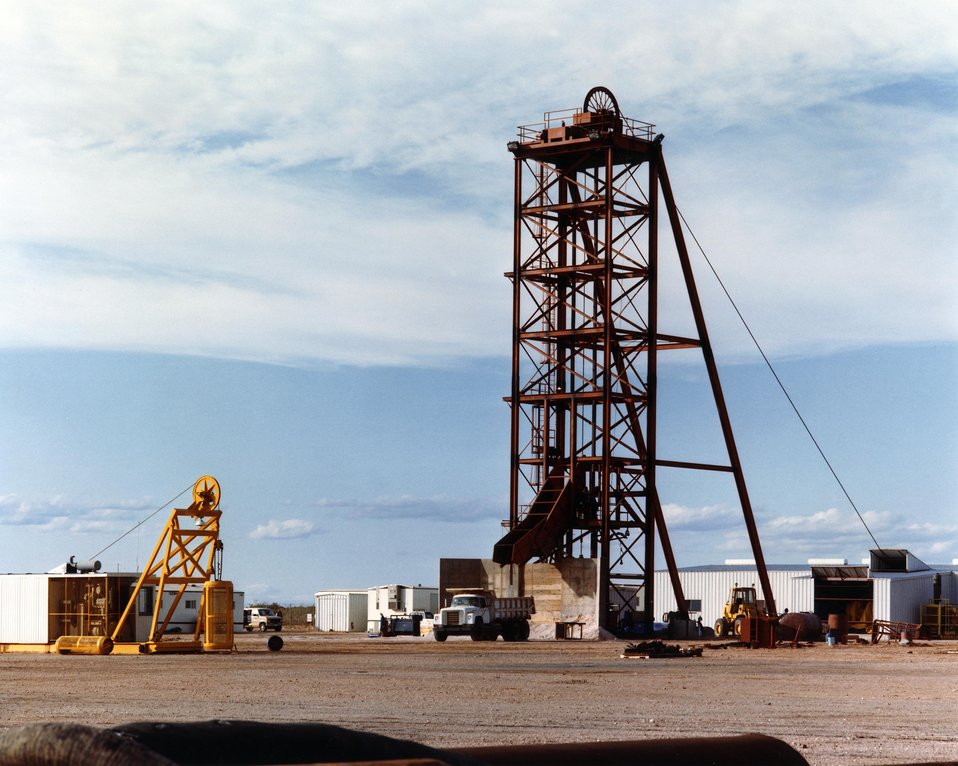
VIEW OF THE TOWER THAT HOLDS THE LIFT CAGE FOR TRANSPORTING MEN MATERIAL INTO THE MINE.

THE WASTE ISOLATION PILOT PLANT IS A DOE RESEARCH AND DEVELOPMENT FACILITY FOR DEMONSTRATING THE SAFE DISPOSAL OF TRANSURANIC RADIOACTIVE WASTES. TEST SHAFTS HAVE BEEN DRILLED TO A DEPTH OF 2,100 FEET. THE SHAFTS, ONE 6 FEET IN DIAMETER AND THE OTHER 12 FEET IN DIAMETER, PROVIDE AN ENTRY PASSAGE AND VENTILATION TO THE UNDERGROUND SALT ROCK FORMATION THAT IS BEING TESTED TO DETERMINE ITS SUITABILITY FOR RADIOACTIVE WASTE STORAGE.